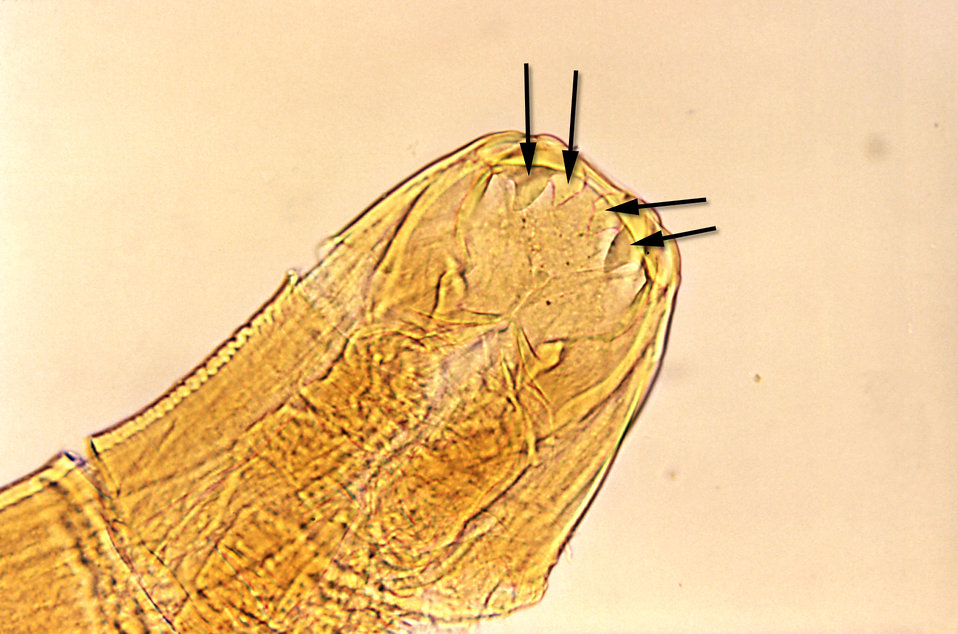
This unstained micrograph reveals the Ancylostoma duodenale hookworm's mouth parts; Mag. 125X.